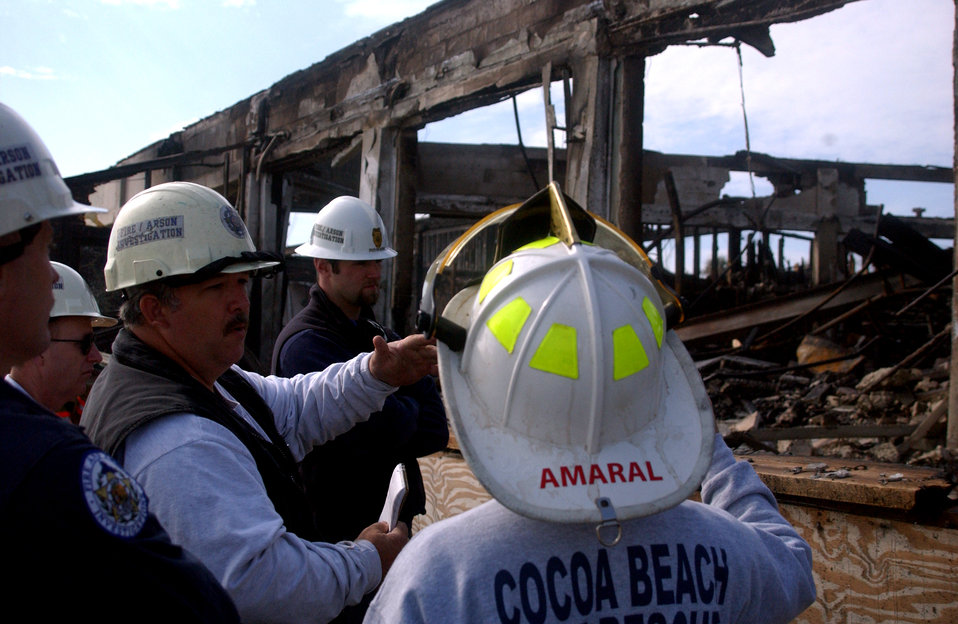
Fire destroys Patrick officers club

PATRICK AIR FORCE BASE, Fla. -- Murray McDonald discusses the structural damage and immediate fire assessment of the officers club here with his colleagues from the State Fire Marshal division. The cause of the blaze is still under investigation. Mr. McDonald is a law enforcement detective.